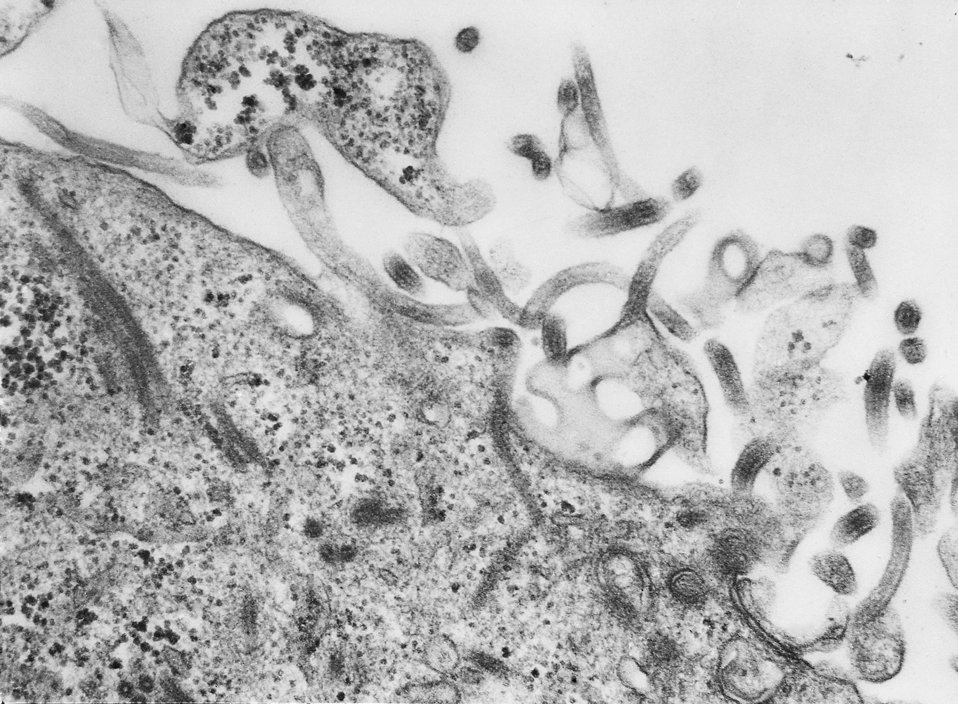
This electron micrograph shows a thin section containing the Ebola virus, the causative agent for African Hemorrhagic Fever.